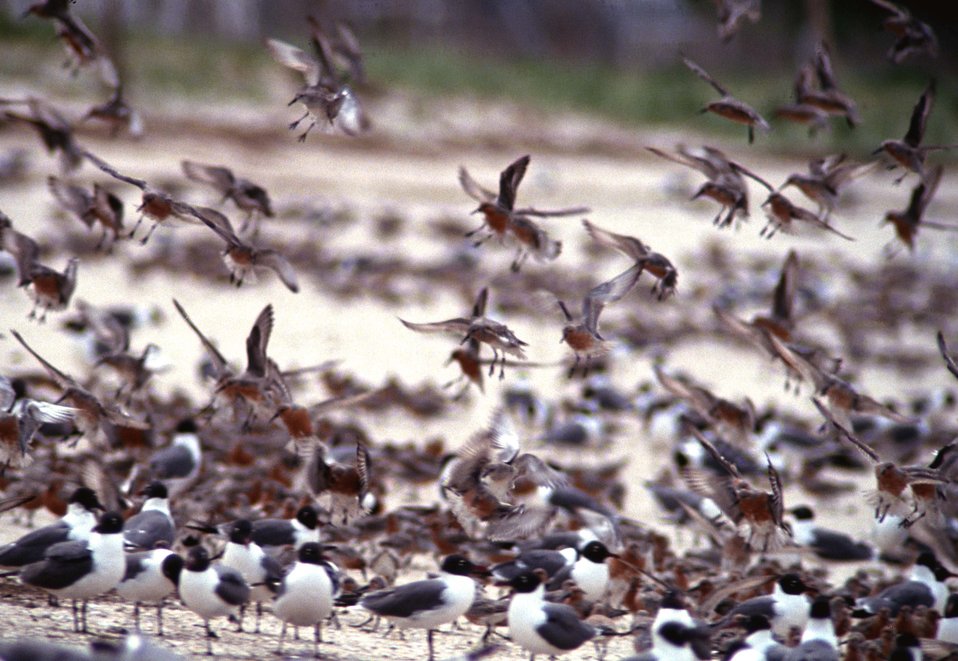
Red Knots and Laughing Gulls

Reed's Beach, NJ.